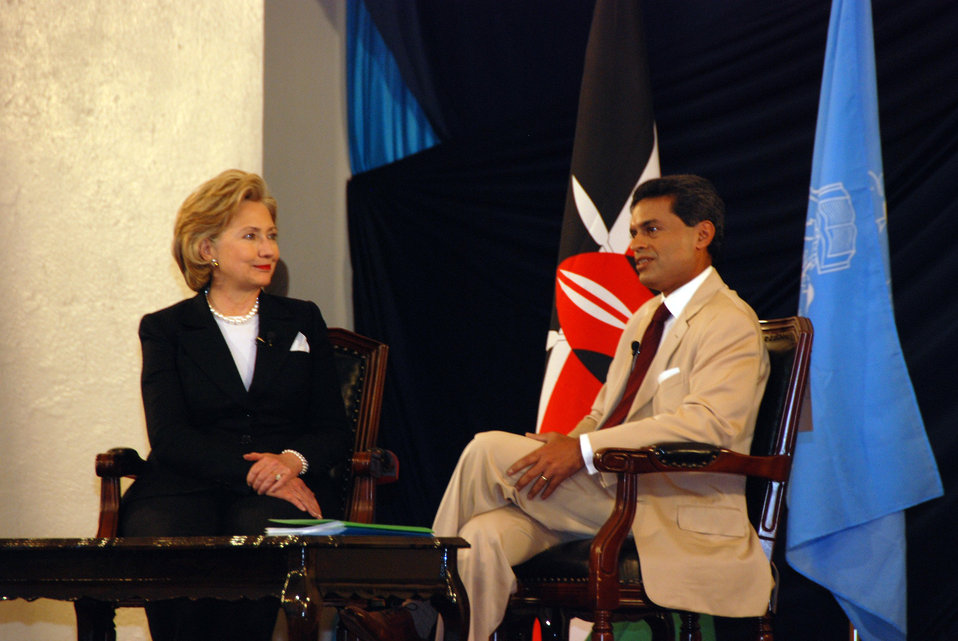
Secretary Clinton Participates in Town Hall Meeting

U.S. Secretary of State Hillary Rodham Clinton participates in a town hall meeting at the University of Nairobi in Nairobi, Kenya August 6, 2009.